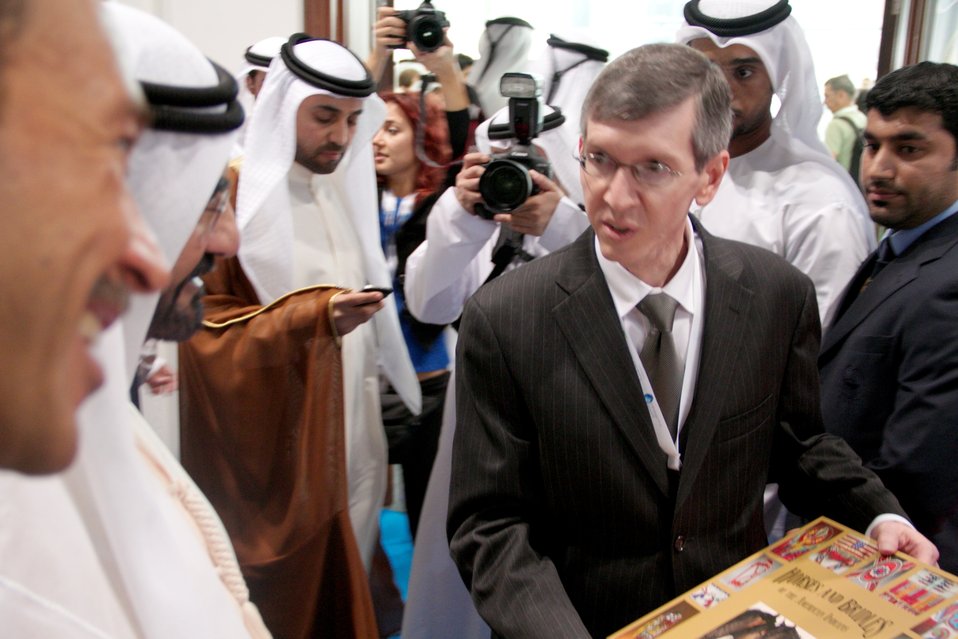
Consul General Waller Presents a Book to the Ruler of Dubai

U.S. Consul General to Dubai Rob Waller presents a book to the Ruler of Dubai, Sheikh Mohammed bin Rashid Al Maktoum, at the Global Entrepreneurship Summit (GES) in Dubai, United Arab Emirates, December 11, 2012.